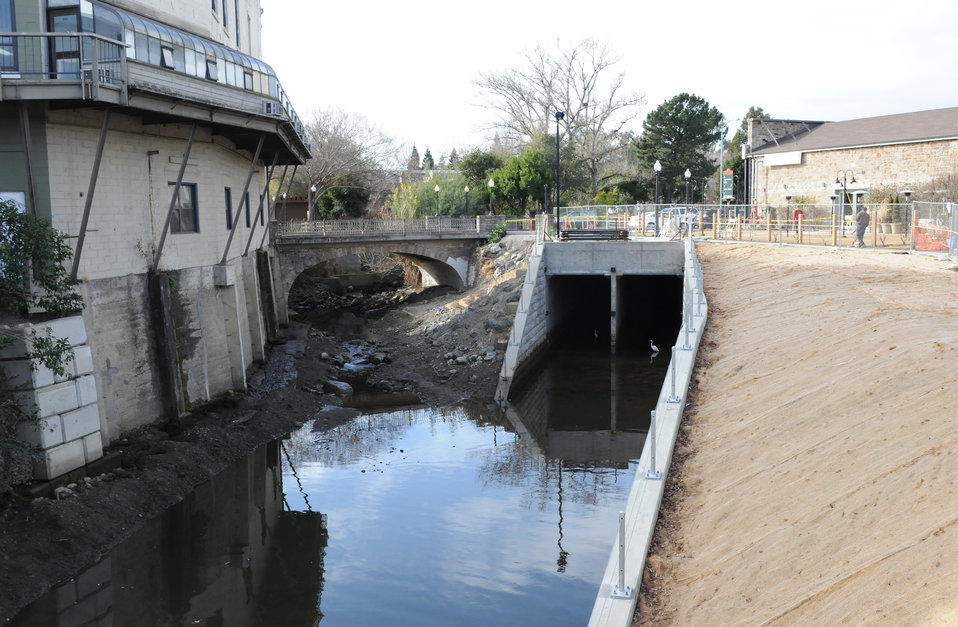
Napa Creek box culverts reduce flood risk

New Box culverts (right) in Napa, Calif., shown Jan. 18, 2012, channel flood water out of Napa Creek directly to the Napa River, reducing flood risk for neighboring homes and businesses. The $14.8 million Napa Creek Project, funded by the American Recovery and Reinvestment Act of 2009, is a joint effort of the U.S. Army Corps of Engineers Sacramento District, the city of Napa and the Napa Flood Control and Water Conservation District to reduce flood risk for the city.